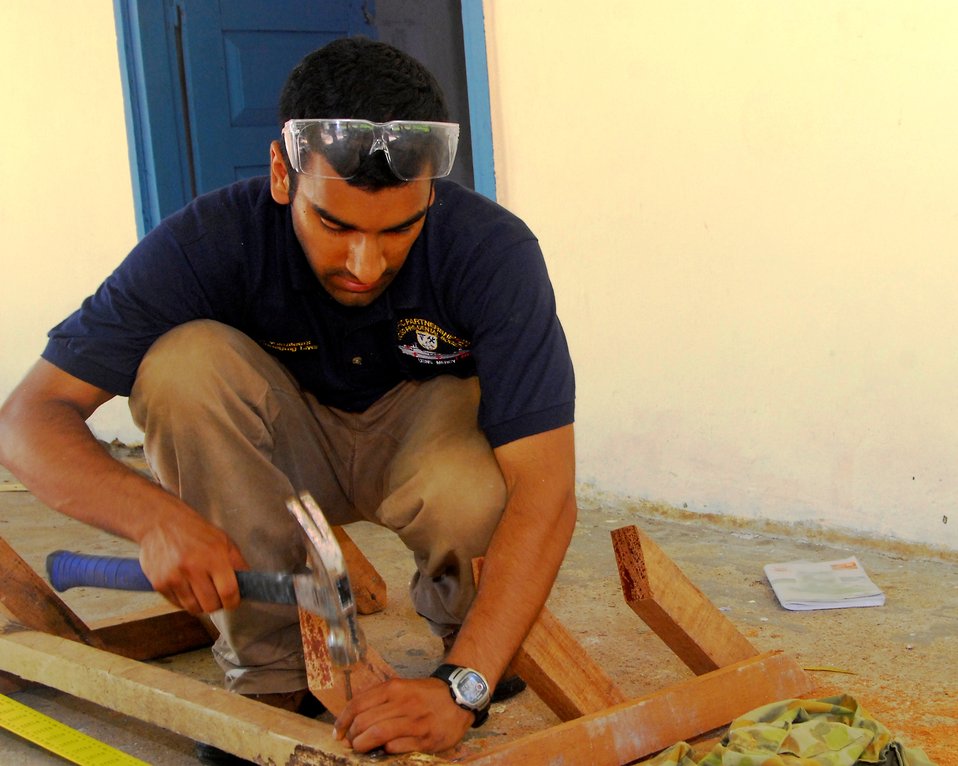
UVA Mech. Engineering Student Dave Gupta Makes a Book Shelf

Dave Gupta, a University of Virginia mechanical engineering student working with University of California, San Diego Pre-Dental Society and currently embarked with the Military Sealift Command hospital ship USNS Mercy (T-AH 19), makes a book shelf at the O. Tres Primary School during an engineering civic action program on June 23, 2010, in Sihanoukville, Cambodia.